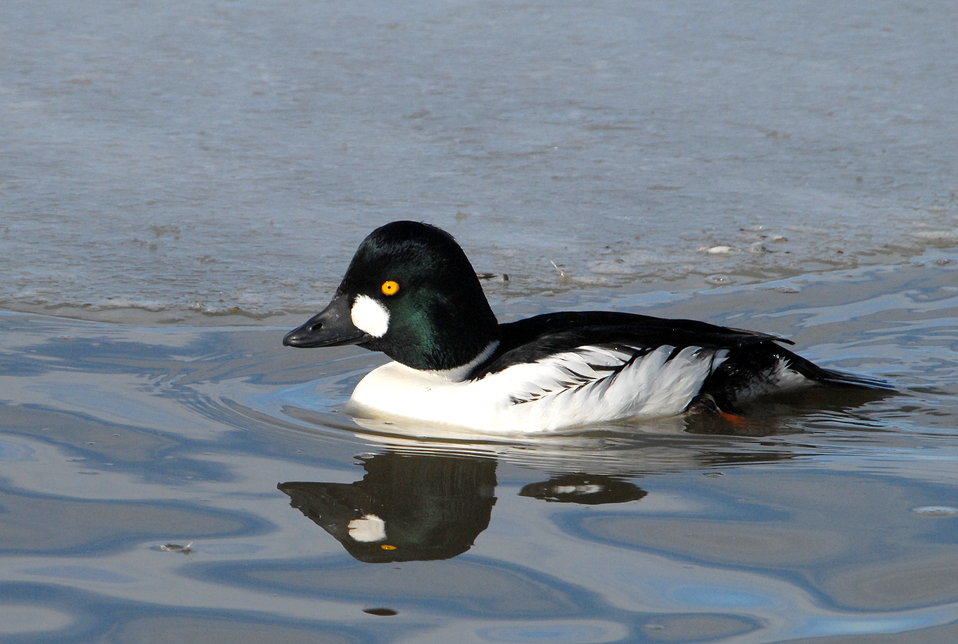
Common Goldeneye (male)